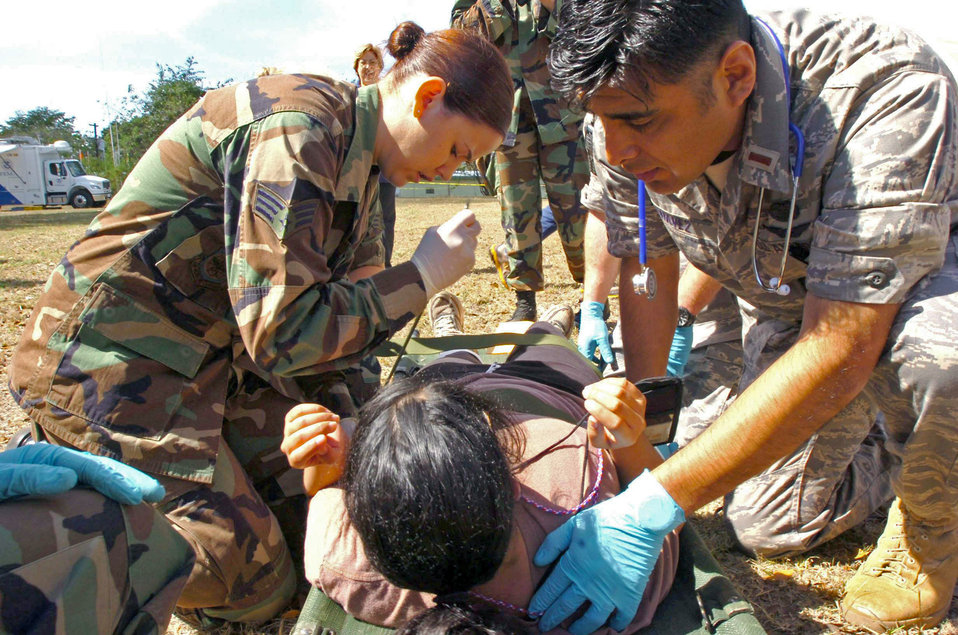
Advanced field hospital put to test in Puerto Rico

Senior Airman Kara Nicholas and 2nd Lt. Tomas Chavez check the vital signs of an incoming patient during Exercise Vigilant Guard March 25 in Camp Santiago, Puerto Rico. Airman Nicholas is a medic, and Lieutenant Chavez is a flight surgeon candidate. Both are from the 161st Air Refueling Wing from the Arizona National Guard.